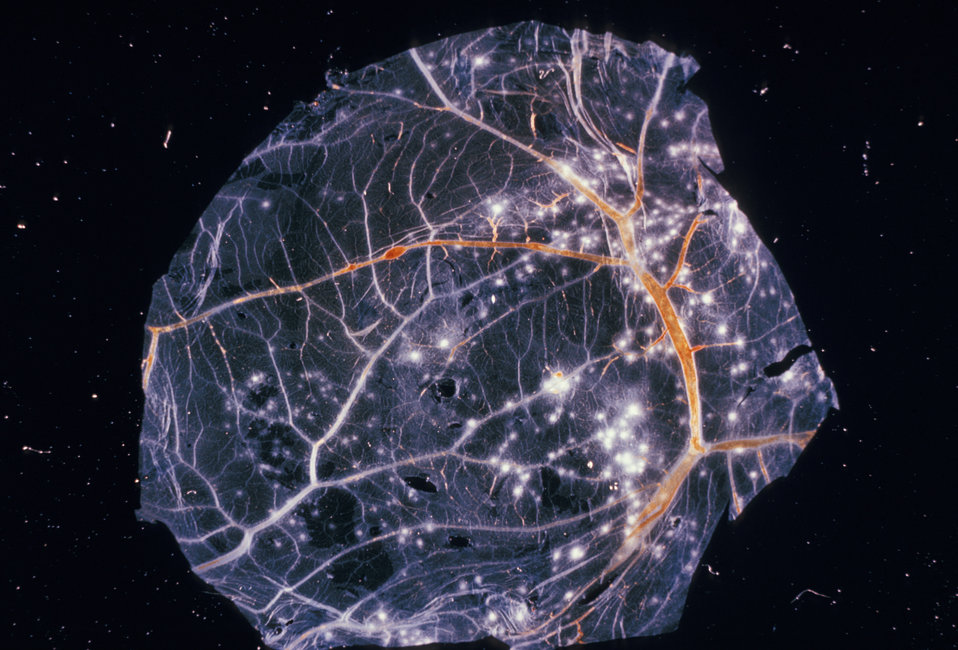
This photograph reveals smallpox virus pocks on the chorioallantoic membrane of a developing embryonic chick.